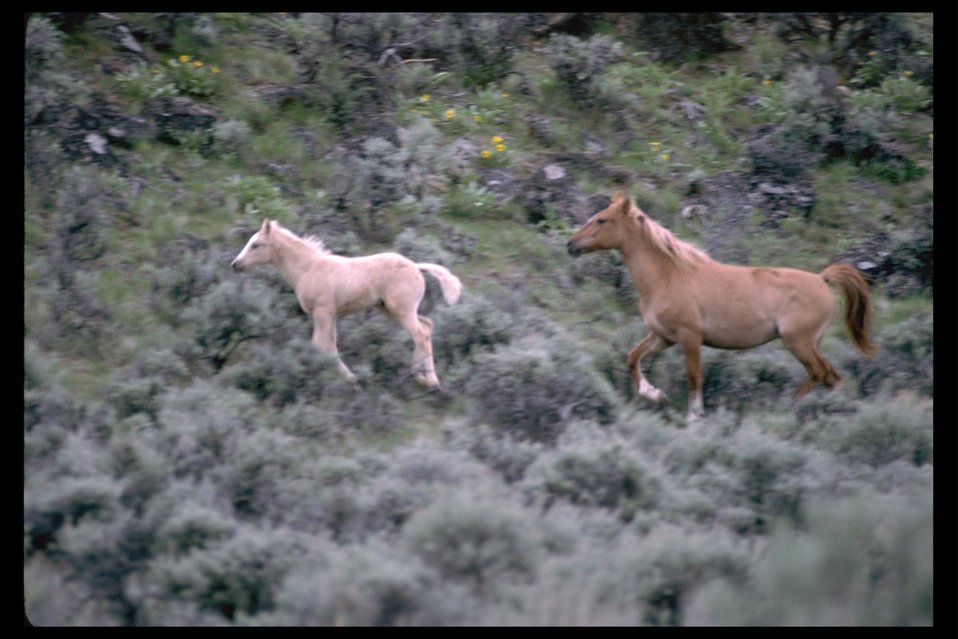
South Steens Pintos on the rangeland of South Steens HMA.